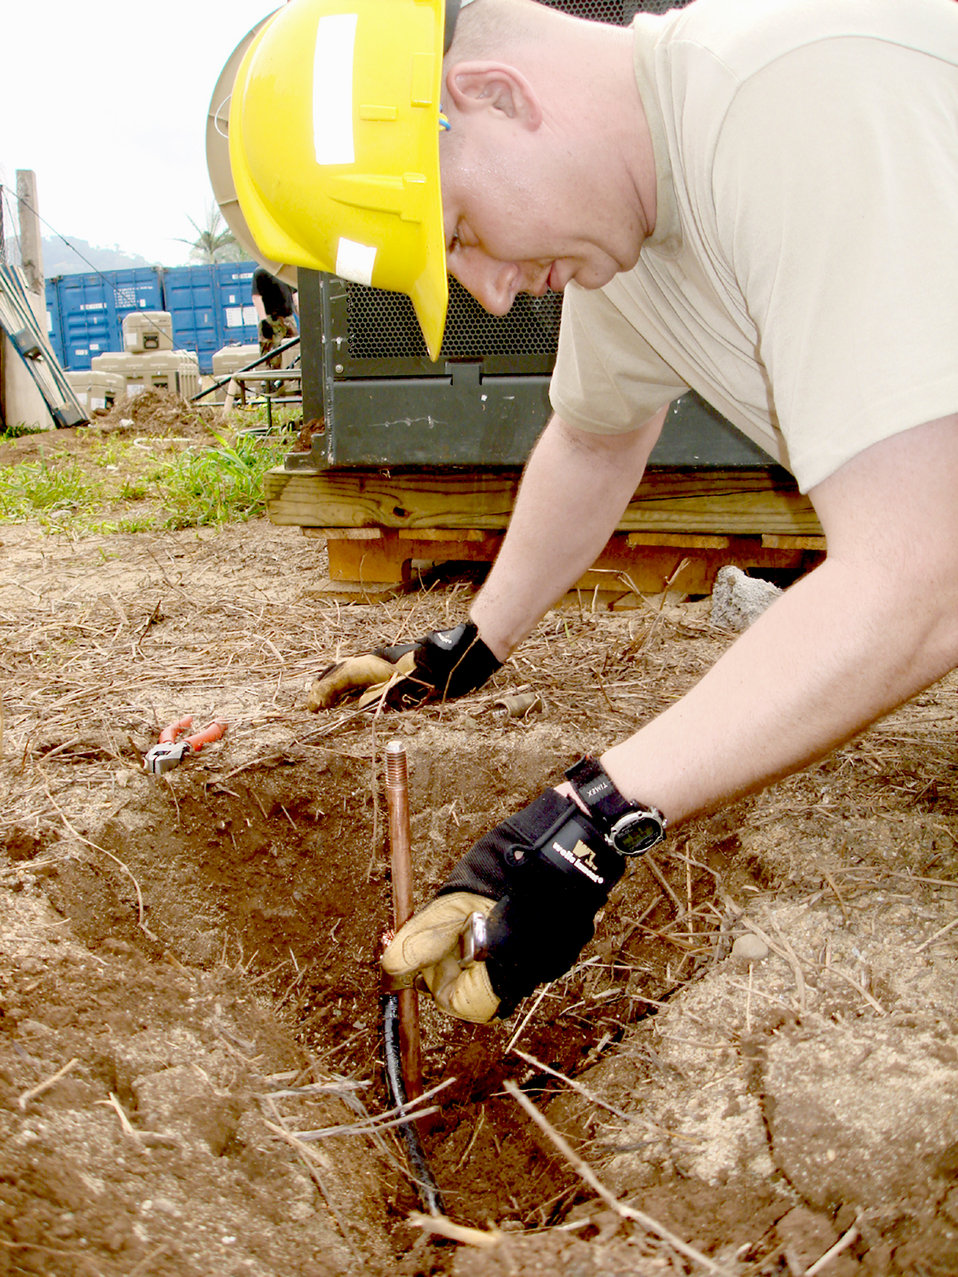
Airmen return from Africa Partnership Station 2009 support

Tech. Sgt. Nathan McNeely drives in a grounding rod during a deployment with U.S. Naval forces for African Partnership Station 2009 Sept. 29, 2009, in West Central Africa. Sergeant McNeely is a power production specialist with the 21st Air Mobility Operations Squadron.